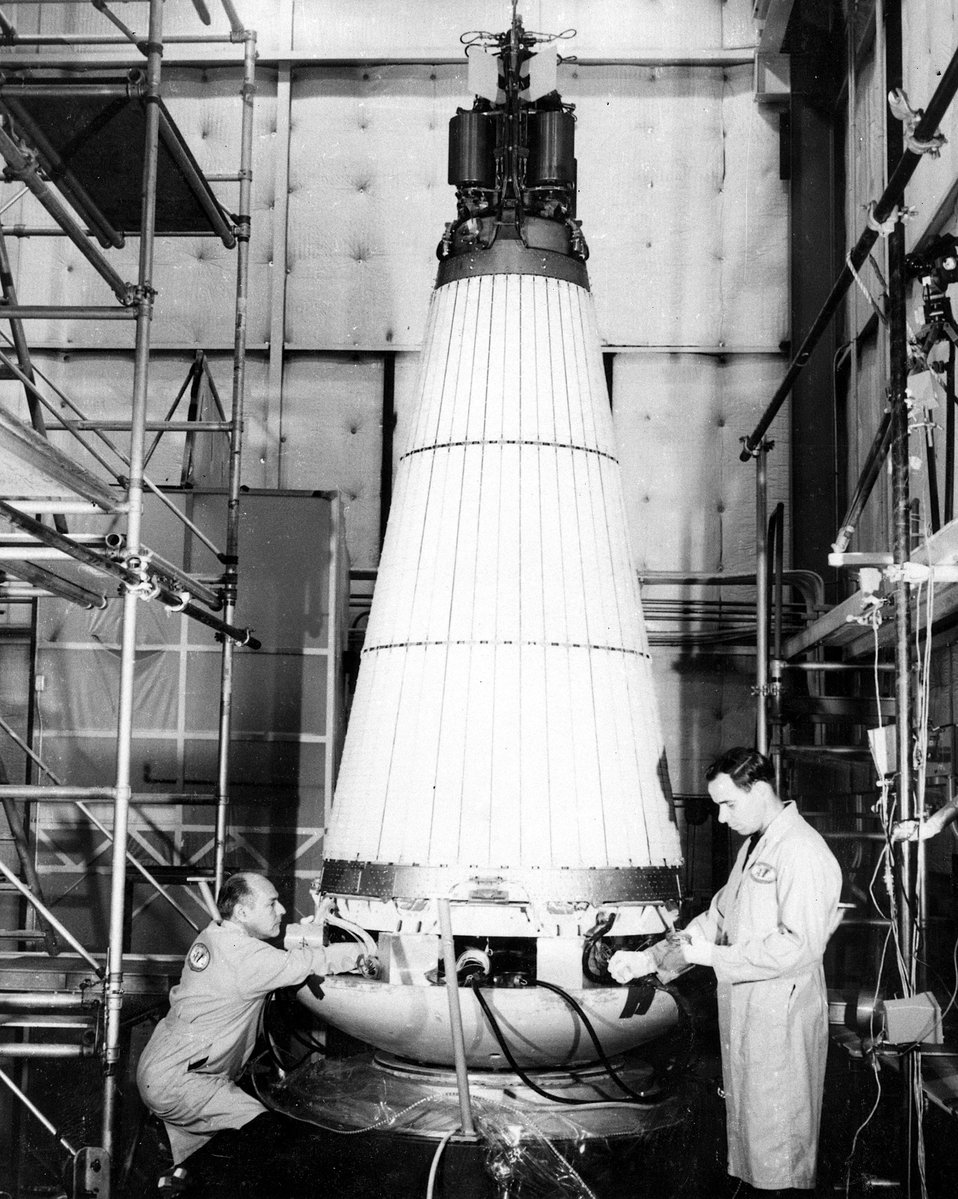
Technicians of Atomics International, Conoga Park, CA, check out a SNAP 10A nuclear space power unit following a shock and vibration test stimulating conditions of launch.